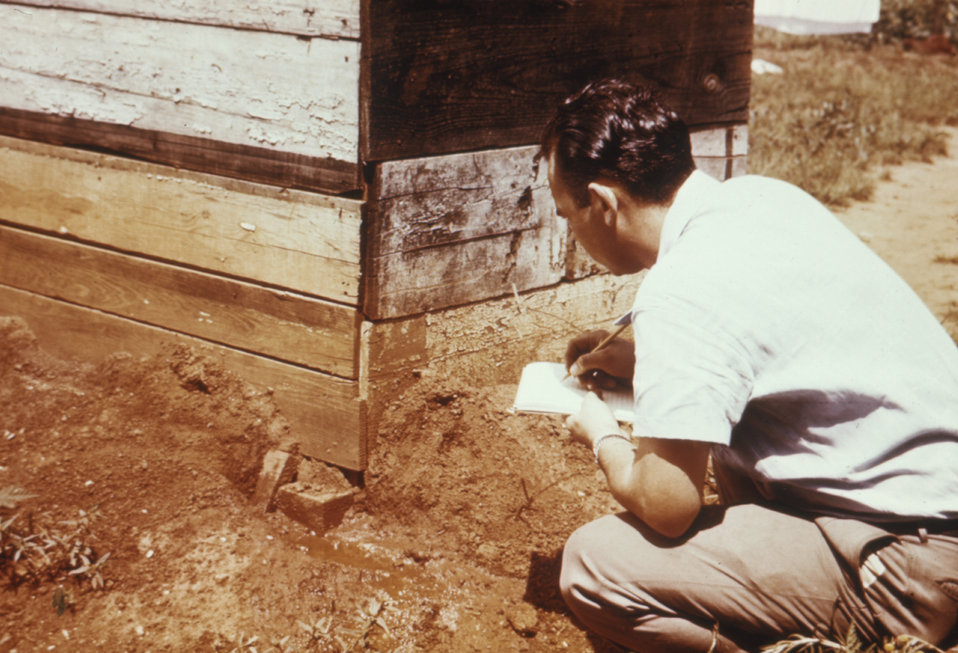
This was part of a series used to familiarize public health inspectors with sanitation conditions in migrant worker camps.